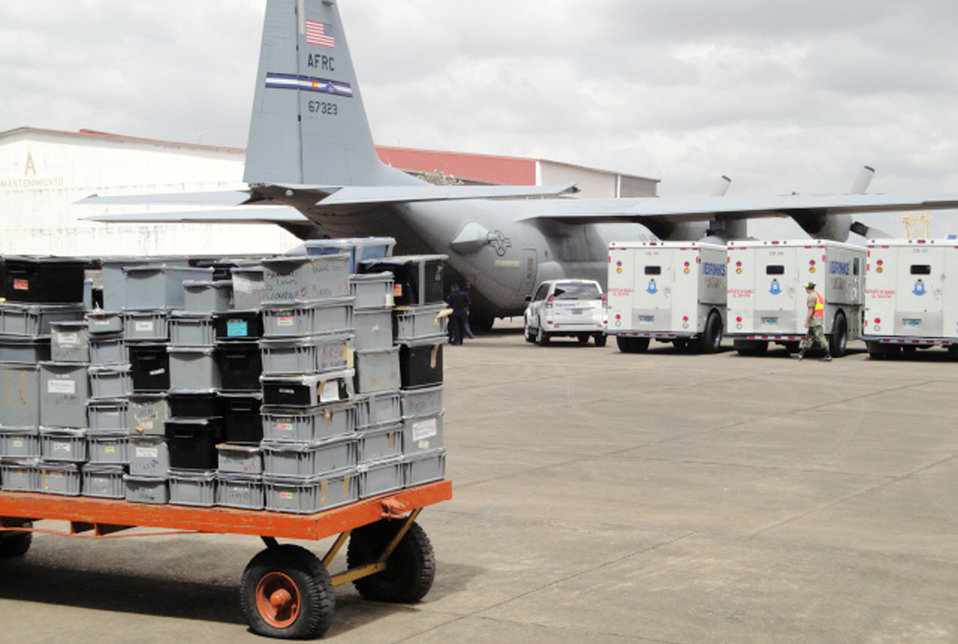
Colorado-based AF reservists support bust of global money laundering case

Several armored trucks full of seized gold, silver and jewels wait to be unloaded as security personnel protect a 302nd Airlift Wing C-130 April 8, 2010, at an air base in Panama. The seized assets were part of a joint Panama-U.S. investigation into an international drug money laundering scheme in the Central American country. Airmen from the Air Force Reserve's 302nd AW were tasked with flying the seized metals and jewels back to the United States for further processing by Department of Justice agencies.